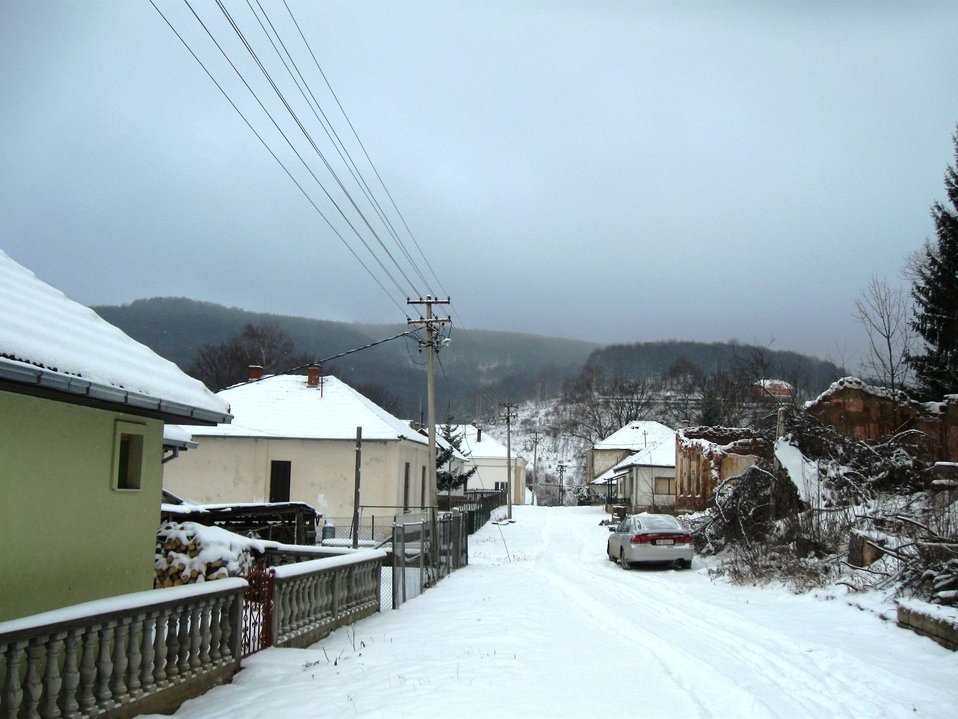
Српски / srpski: аутор: Радосав Стојановић